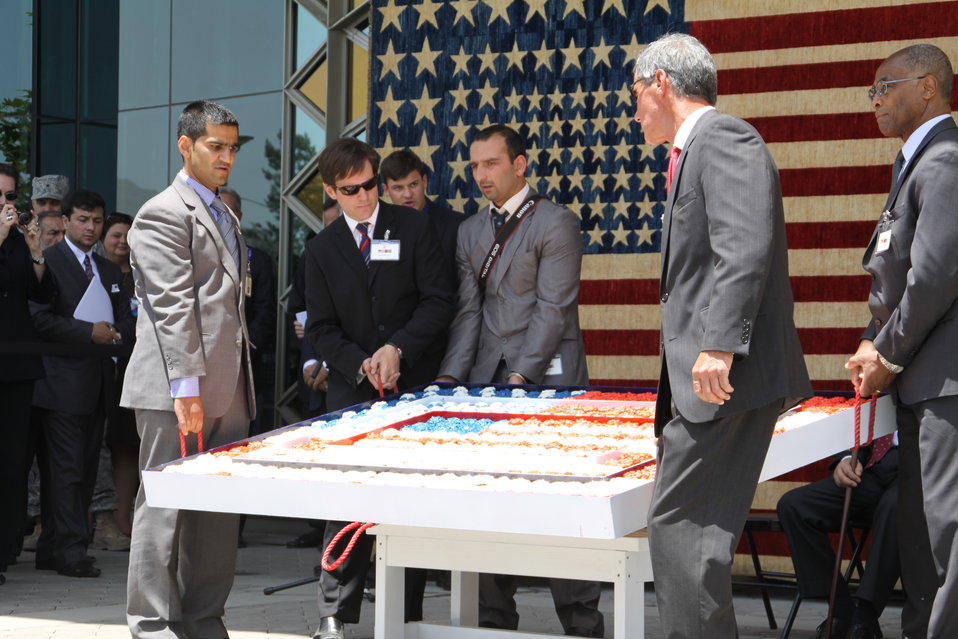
Kabul Official July 4th Celebration